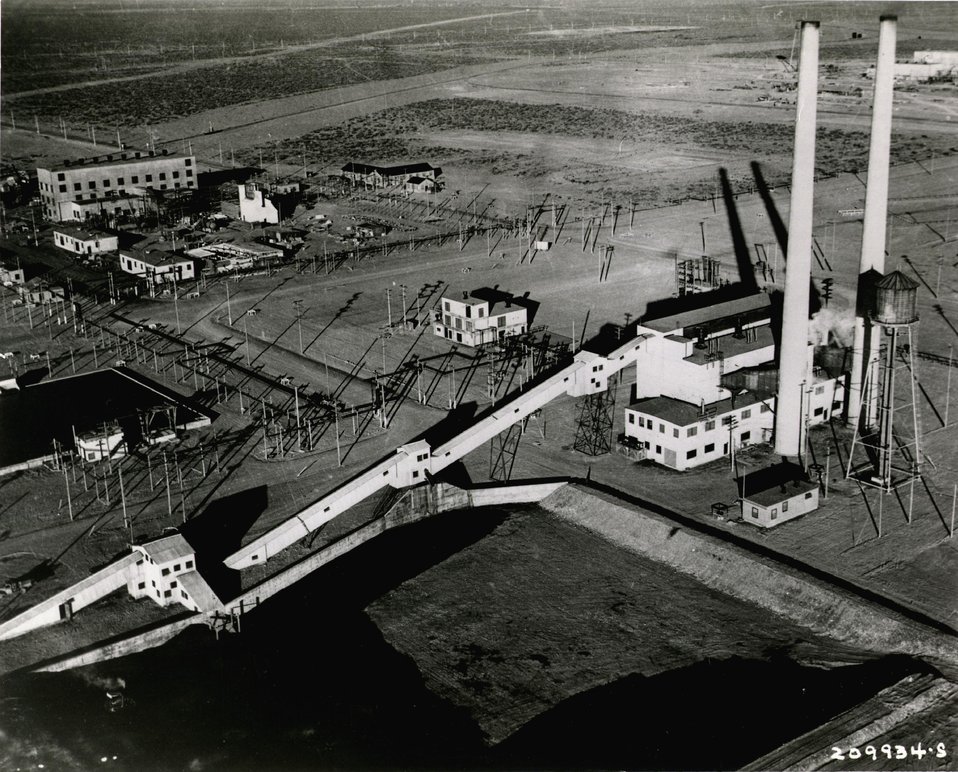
Aerial view of the production areas of the Hanford Engineer Works. Circa 1945.